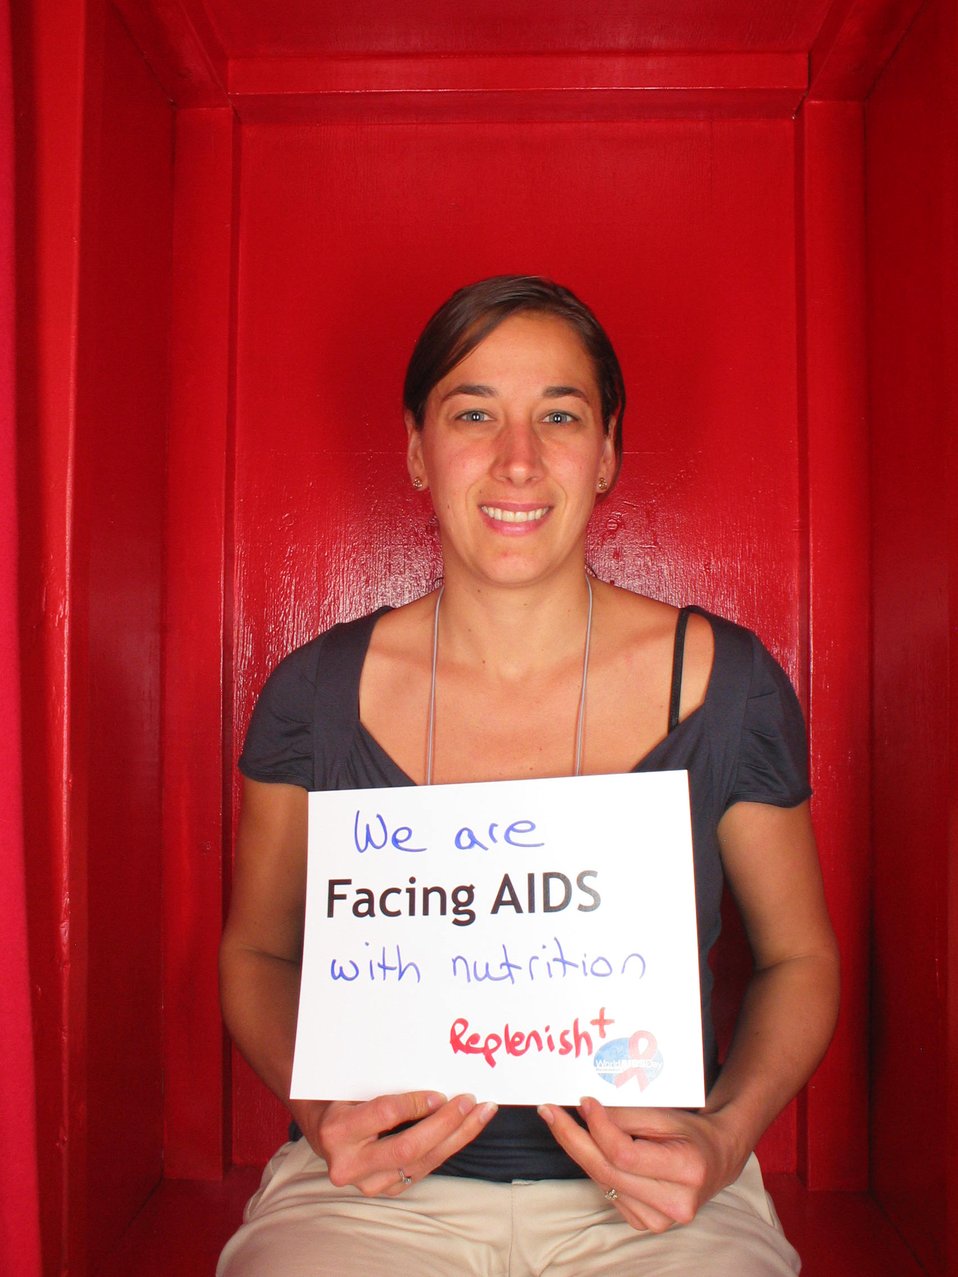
We are Facing AIDS with nutrition replenish